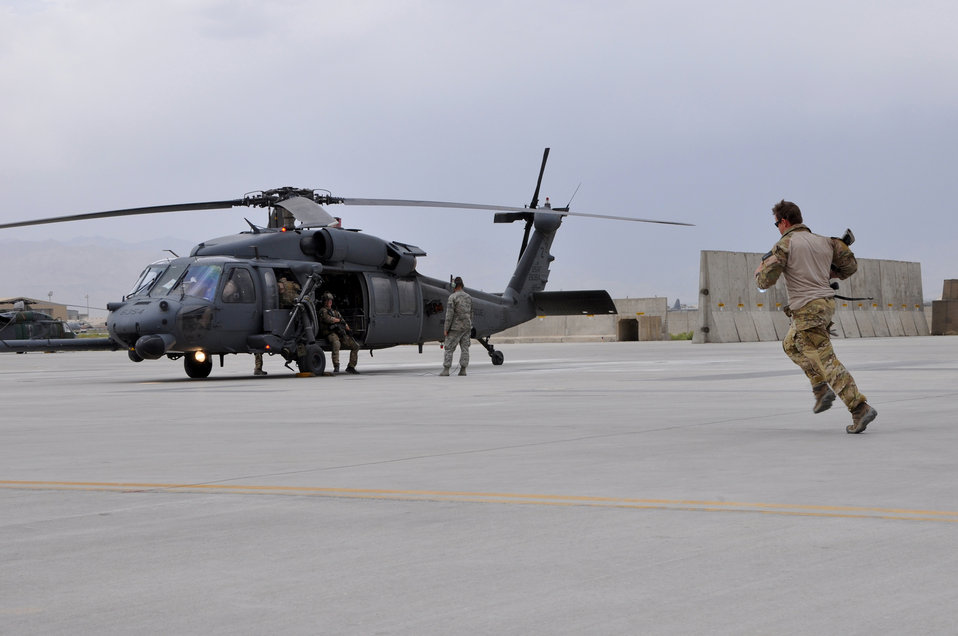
Pave Hawk rescue mission

Tech. Sgt. Kris Burridge runs toward an HH-60G Pave Hawk helicopter June 11, 2011, at Bagram Airfield, Afghanistan. Sergeant Burridge is a pararescue jumper assigned to the 83rd Expeditionary Rescue Squadron.